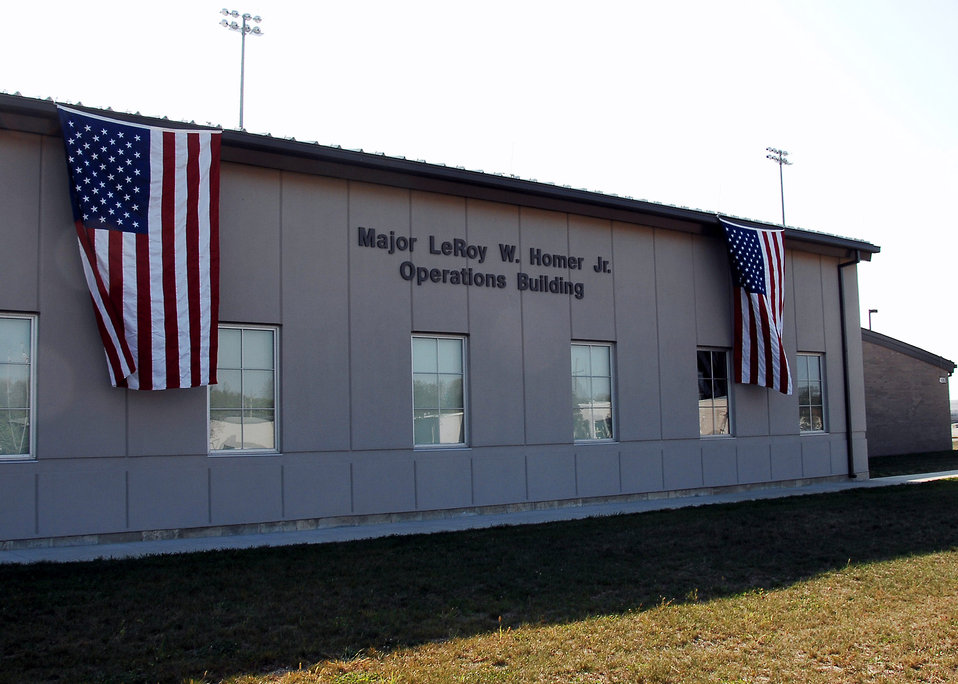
Building dedication honors Airman killed on 9/11

Members of the 445th Airlift Wing dedicated its operations building in honor of Maj. LeRoy W. Homer Jr. Oct. 4 at Wright-Patterson Air Force Base, Ohio. Major Homer died Sept. 11, 2001, on board United Airlines Flight 93, when he was serving as the airplane's first officer.